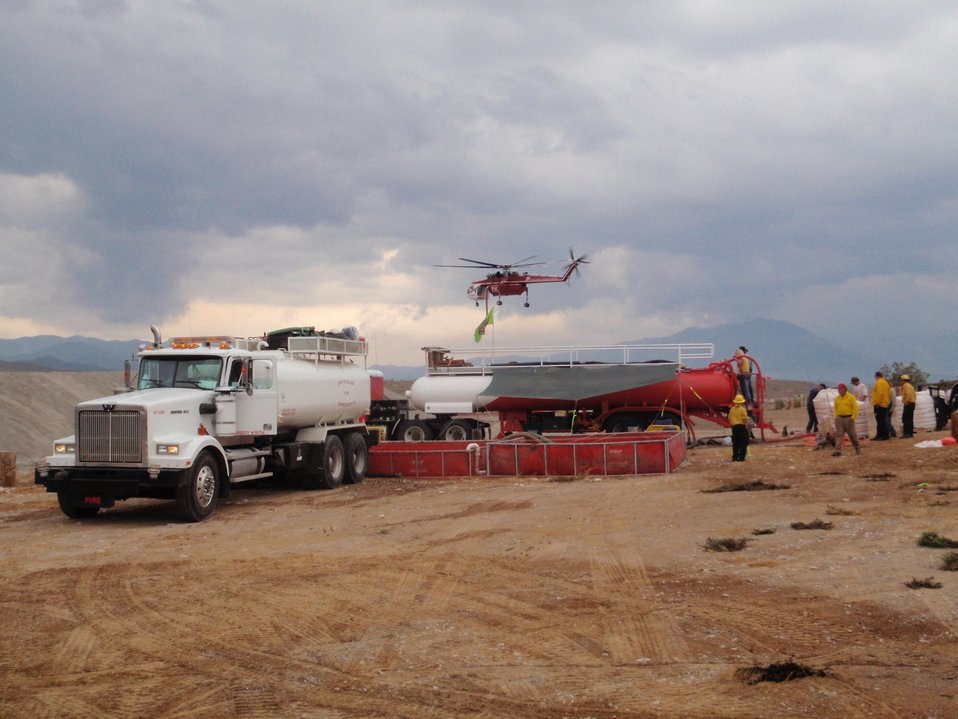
A helicopter refills its water bucket at a Mobile Batch Plant. The Mobile Batch Plant supplies both water and flame retardant chemicals to fire helicopters and is especially effective for remote areas. The Carpenter Fire in the Toiyabe National Forest near Humboldt, NV was caused by a lightning strike on Jul. 1, 2013. The fire has consumed nearly 27,881acres and is presently 70% contained.